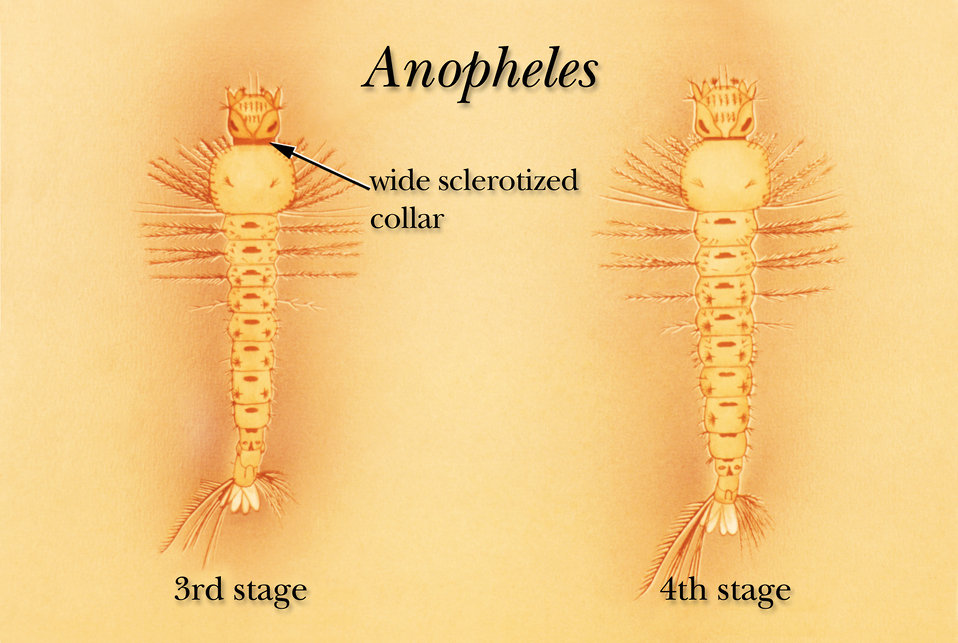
Drawing of the third and fourth growth stages of an Anopheles mosquito larva.